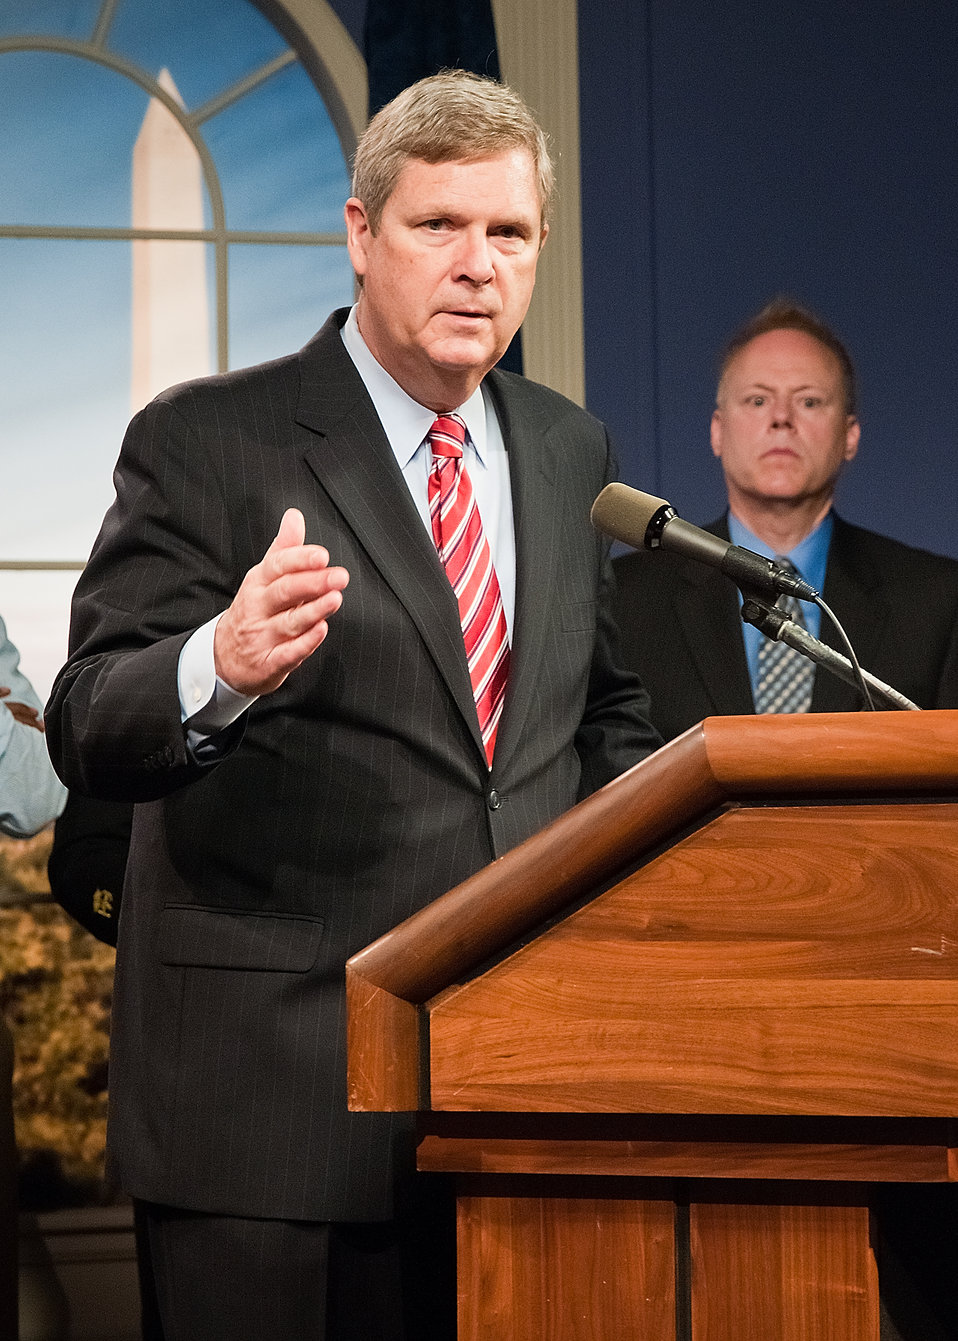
Agriculture Secretary Tom Vilsack (at podium) with Deputy Director, Center for Nutrition Policy and Promotion Robert Post (right) held a press conference directly after the announcement new food icon that will serve as a reminder to help consumers make healthier food choices at the U.S. Department of Agriculture (USDA) on Thursday, June 2, 2011. First Lady Michelle Obama and Surgeon General Regina Benjamin accompanied Secretary Vilsack at the launch of the new food icon. The White House Child Obesity Task Force called for simple advice to consumers with information to help them make healthy food choices. As a result USDA has introduced the new food icon to replace the MyPyramid image representing the food guide pyramid as the government’s primary food group symbol. The new food icon will be part of a comprehensive nutrition communication initiative that provides consumers with easy-to-understand recommendations, a new website with expanded information and other tools and resources.